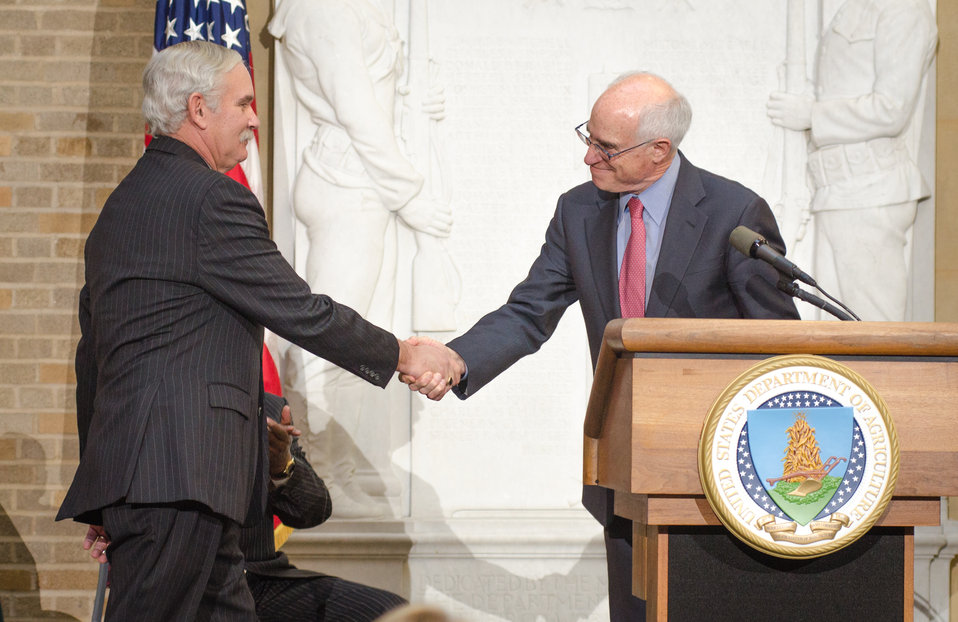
U.S. Department of Agriculture (USDA) Natural Resources and Environment Under Secretary Harris Sherman, right, turns over the honor of leading the 2013 USDA Combined Federal Campaign to Farm and Foreign Agricultural Services Under Secretary Michael Scuse, during the 2012 Combined Federal Campaign Awards Ceremony, Thursday, Mar. 21, 2013, at the USDA Whitten Building Patio, in Washington D.C.